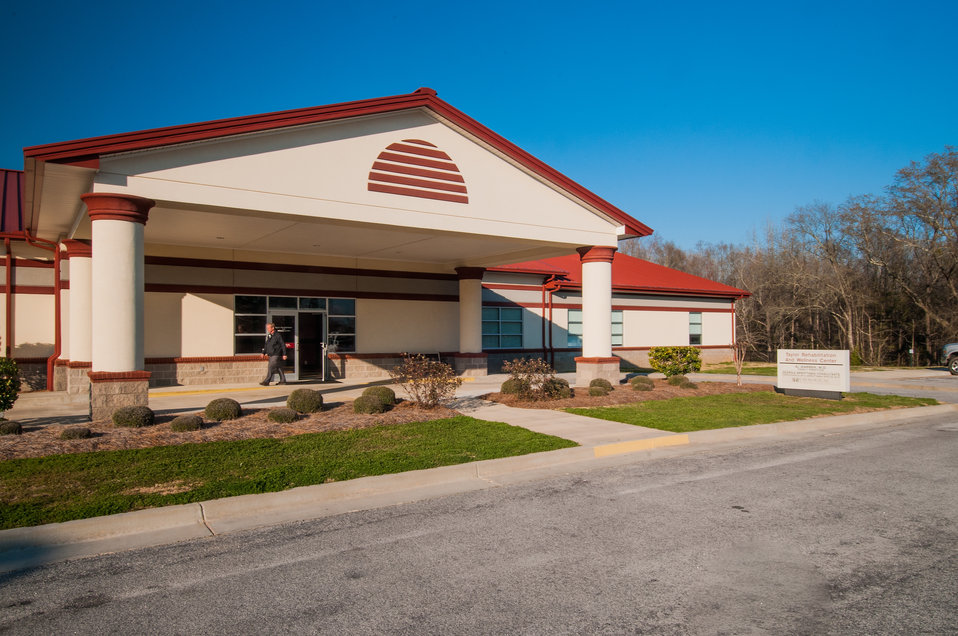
The R.J. Taylor Memorial Hospital on a sunny day in Hawkinsville, Pulaski County, GA on Mar. 6, 2013. This is the hospital’s main location and the facility is a licensed private, not-for-profit acute care facility providing emergency, specialty and primary health care. There is a second hospital located in Bleckly County, GA which provides services to residents in these two very rural counties of Georgia. These counties have a high percentage of people living below the state average poverty level and are considered the most economically distressed. The hospital has purchased an Electronic Medical Records System under an incentive program by the Federal government through the U.S. Department of Agriculture (USDA) Rural Development (RD) Community Facilities Loan (CF) that ensures fiscally responsive access to superior quality integrated health care.